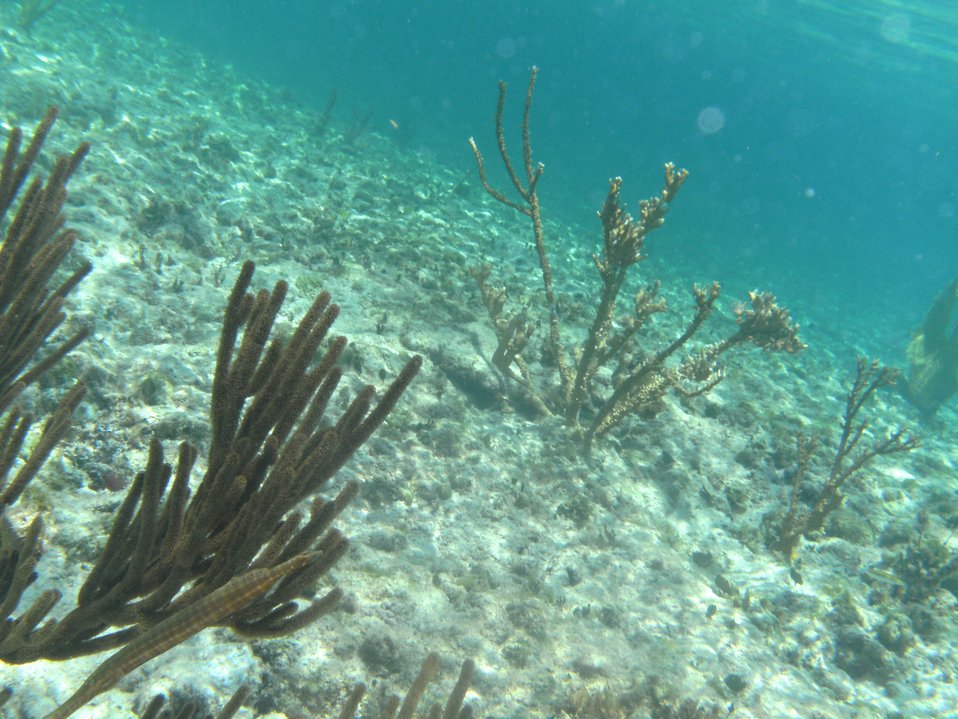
Sea rod gorgonian coral with polyps extended, fire coral in right background, trumpetfish (Aulostomus maculatus) camouflaging self by blending in with sea rods.